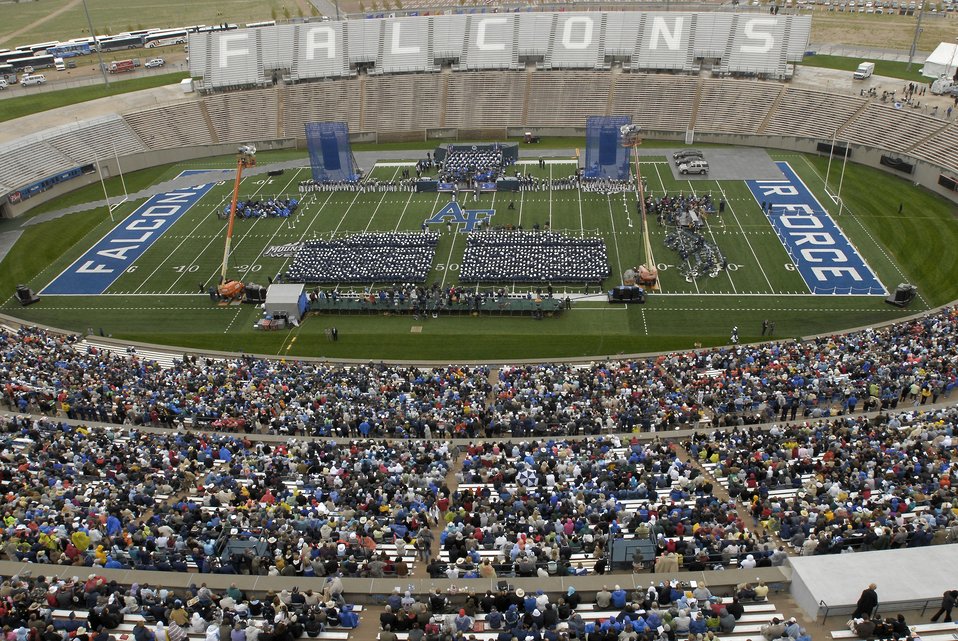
The 50th Academy class graduates

A bird's eye view of the U.S. Air Force Academy Class of 2008 graduation ceremony as 1,012 cadets receive their diplomas and graduate as second lieutenants May 28 at Falcon Stadium.